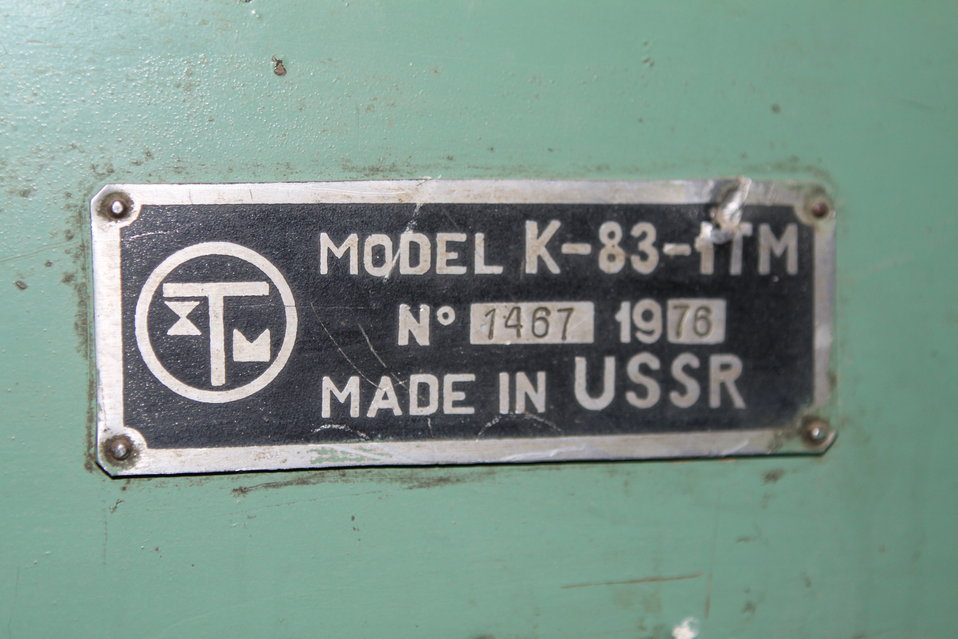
100525 Hirat Textile Company 750